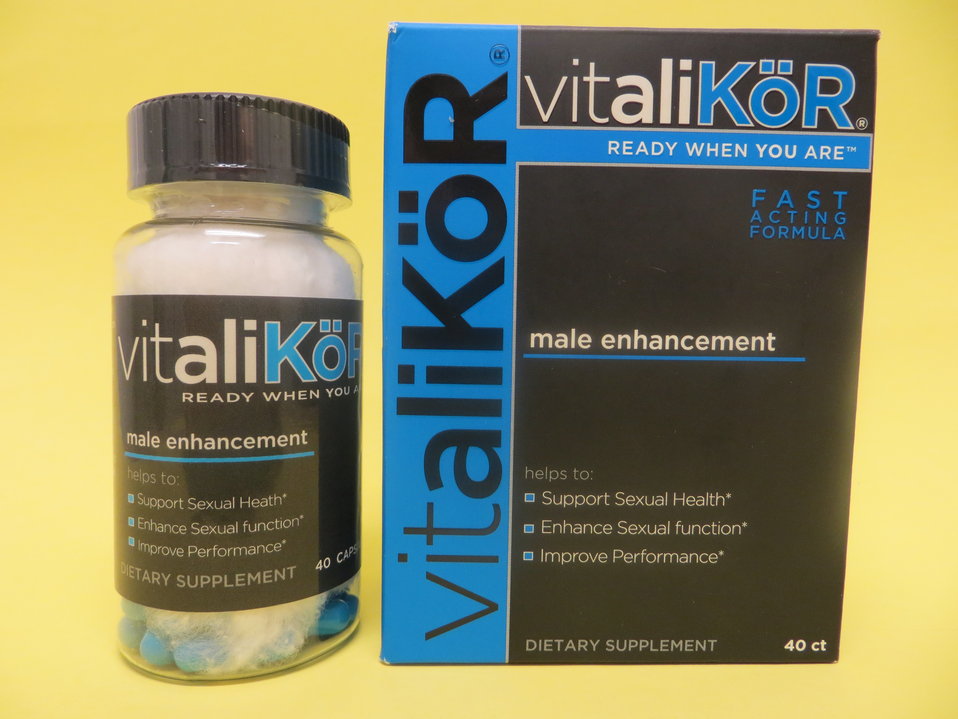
Vitalikor Fast Acting

November 8, 2013 - The FDA is advising consumers not to purchase or use 'Vitalikor Fast Acting,' a product promoted and sold for sexual enhancement. The product was found to contain undeclared tadalafil and vardenafil. For more information, go to www.fda.gov/Drugs/ResourcesForYou/Consumers/BuyingUsingMe...

And read this Consumer Update: Beware of Fraudulent ‘Dietary Supplements’